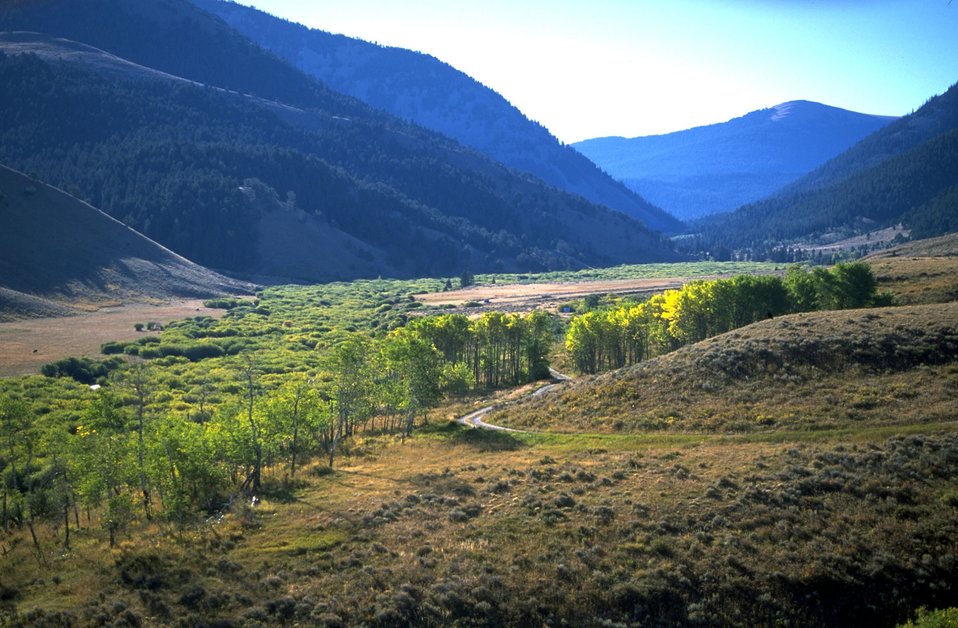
Valley between forested slopes with Aspen and Willows